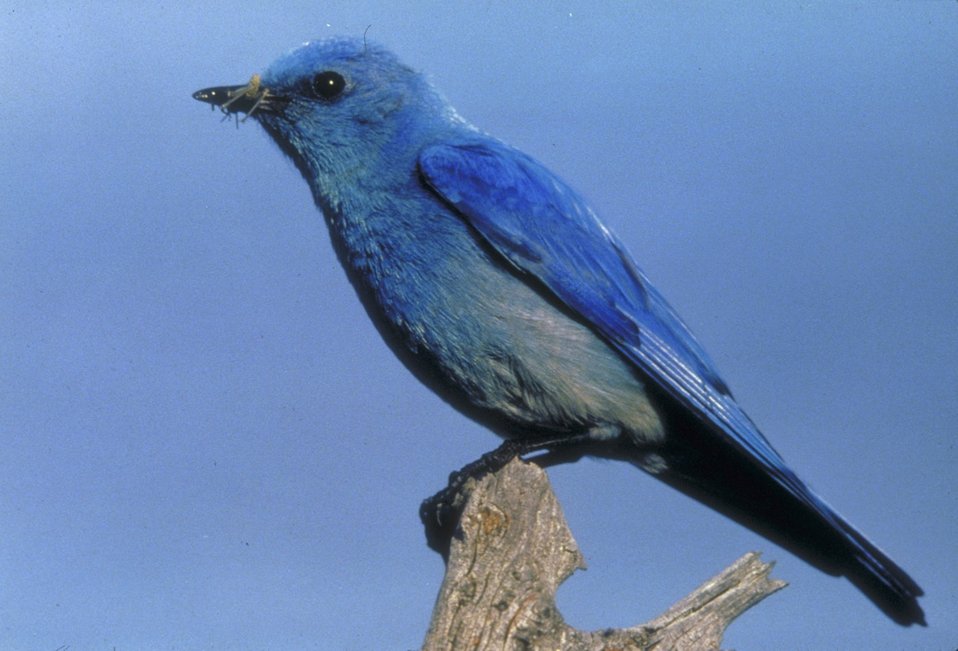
Mountain Bluebird